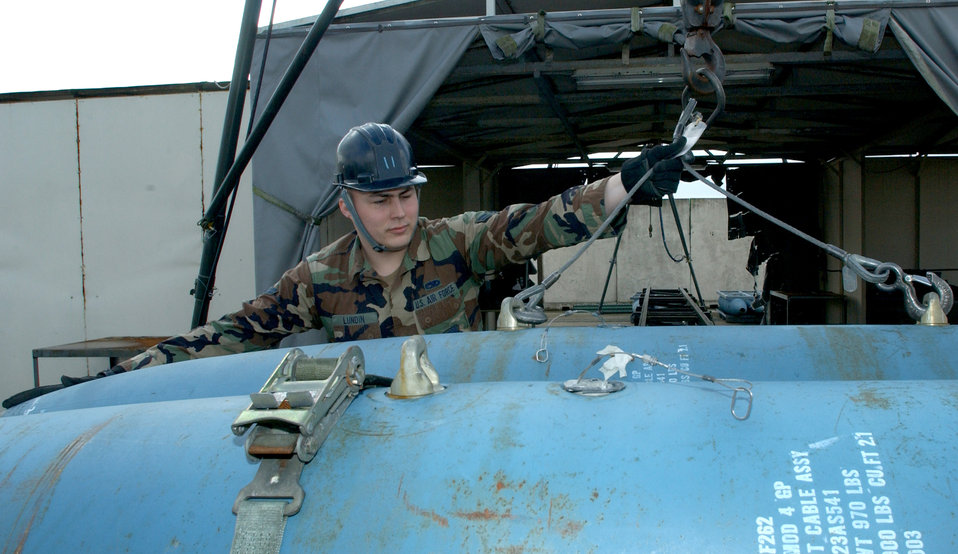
Big bad bomb

ROYAL AIR FORCE LAKENHEATH, England -- Airman 1st Class Michael Lundin gets ready to move a bomb here April 13. Airman Lundin is a conventional maintenance crewmember with the 48th Munitions Squadron. The squadron provides munitions and armament systems maintenance for one F-15 Eagle and two F-15E Strike Eagle fighter squadrons.